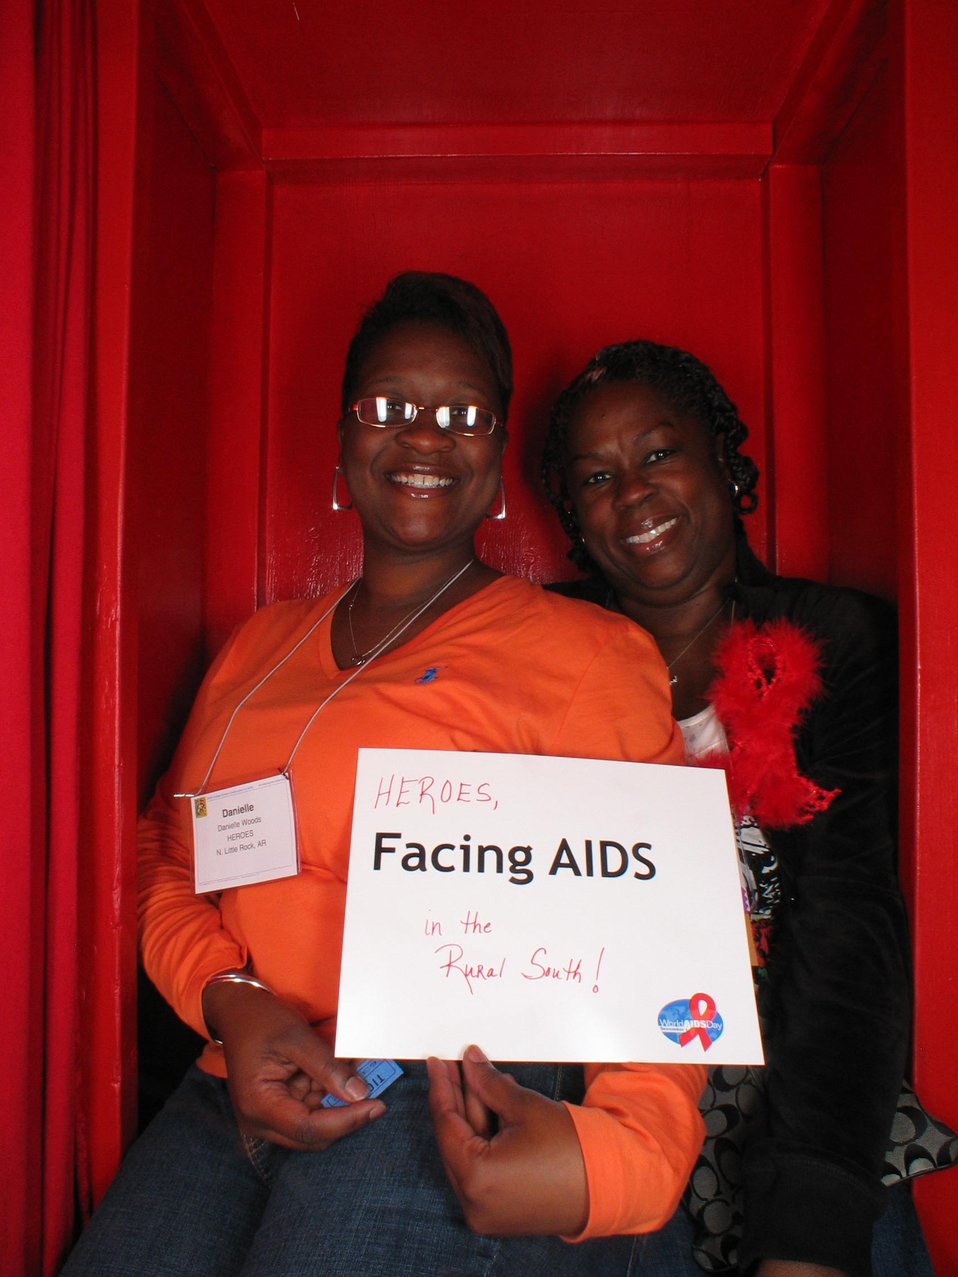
Facing AIDS in the Rural South.